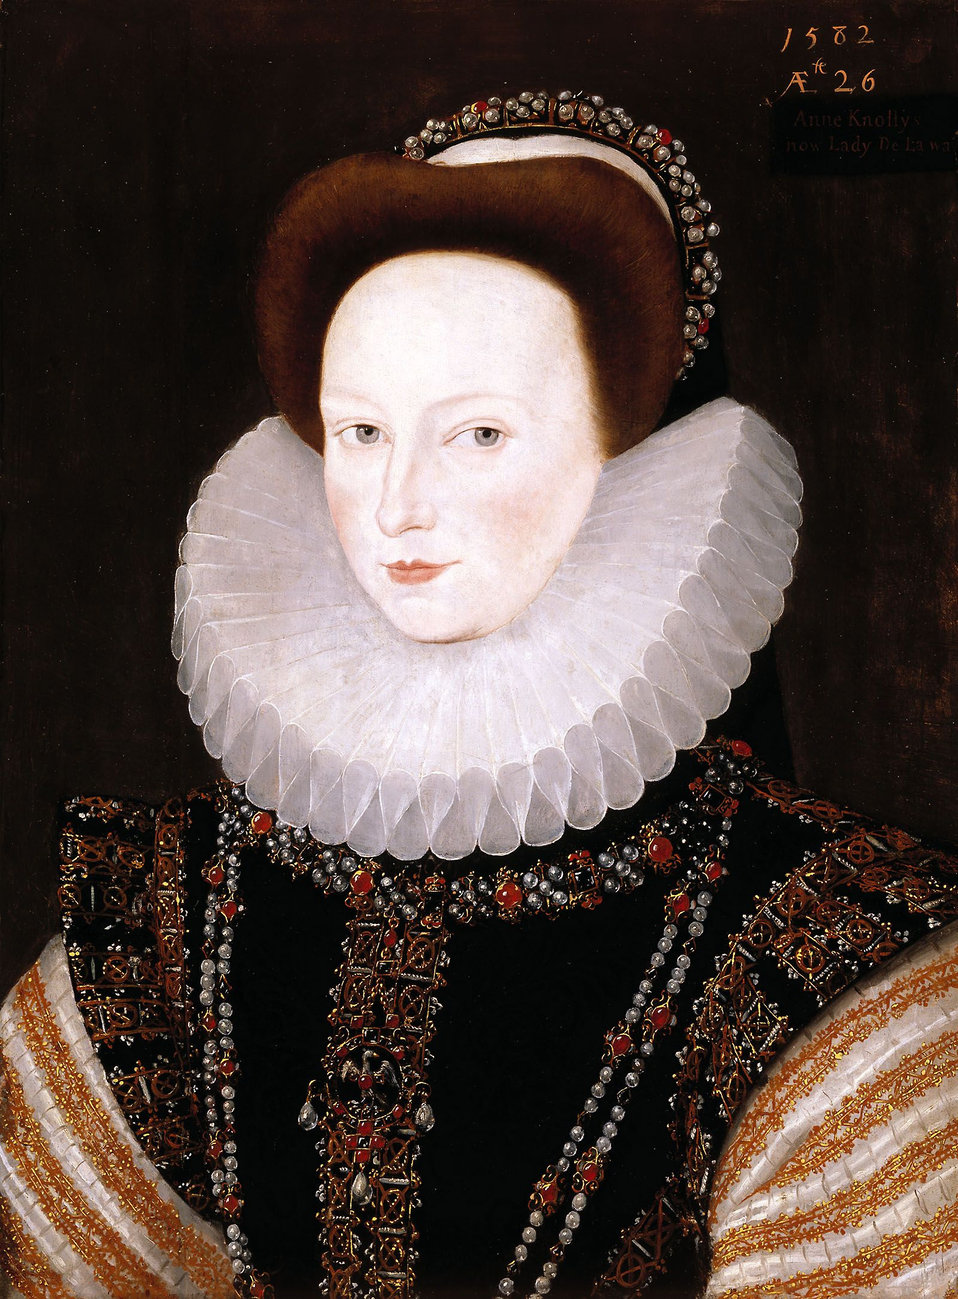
Anne Knollys) by Robert Peake